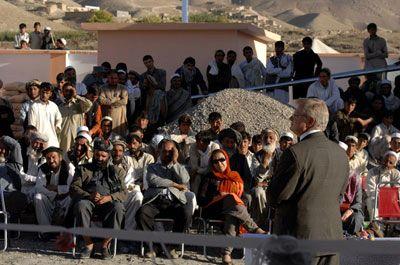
Assistant Secretary Schwartz Prepares To Address the Audience

U.S. Assistant Secretary of State for Population, Refugees, and Migration Eric Schwartz prepares to address audience at the inauguration of a U.S. government-sponsored health clinic at a refugee reintegration program site near Kabul, Afghanistan, on October 10, 2010. Assistant Secretary Schwartz then traveled to Afghanistan from October 10-12, 2010. He began with a visit to a rural village comprised primarily of returnees, where U.S. funds have supported a healthcare facility that will now be run by the Afghan Ministry of Public Health. In Mazar-e-Sharif, he visited a government-provided land allocation site for returnees, as well as a center for Afghan women returnees focused on literacy training, heath education, rights awareness and cultural studies. In Kabul, he toured the Orthopedic Hospital run by the International Committee for the Red Cross.